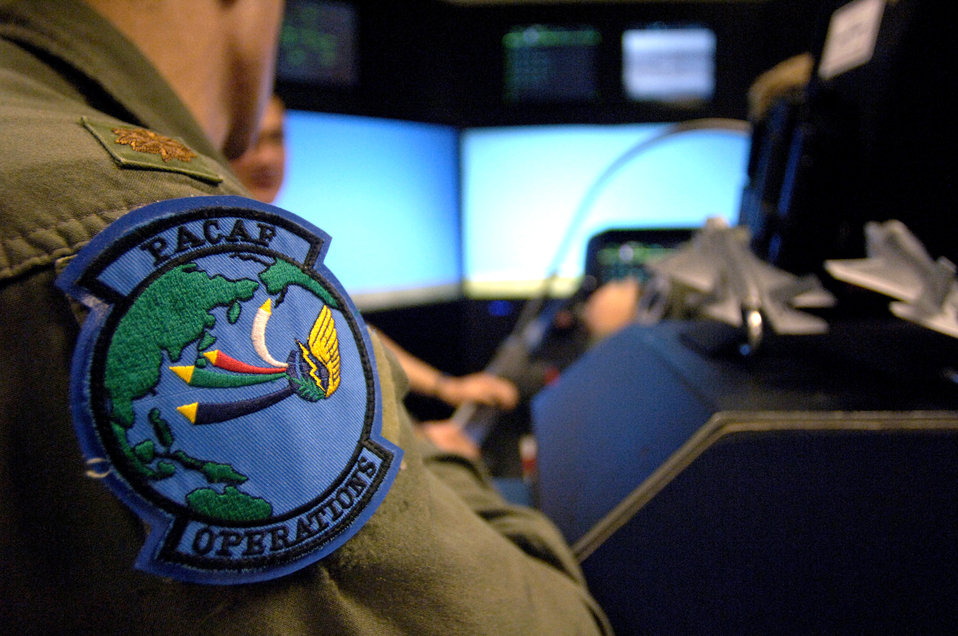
JSF

HICKAM AIR FORCE BASE, Hawaii (AFPN) -- Maj. Steve Biggs watches an F-35 Joint Strike Fighter simulator flight here. The simulator demonstrates the advanced capabilities of the F-35 -- the joint fighter of the 21st century. Major Biggs is from the Headquarters Pacific Air Force advanced programs office.